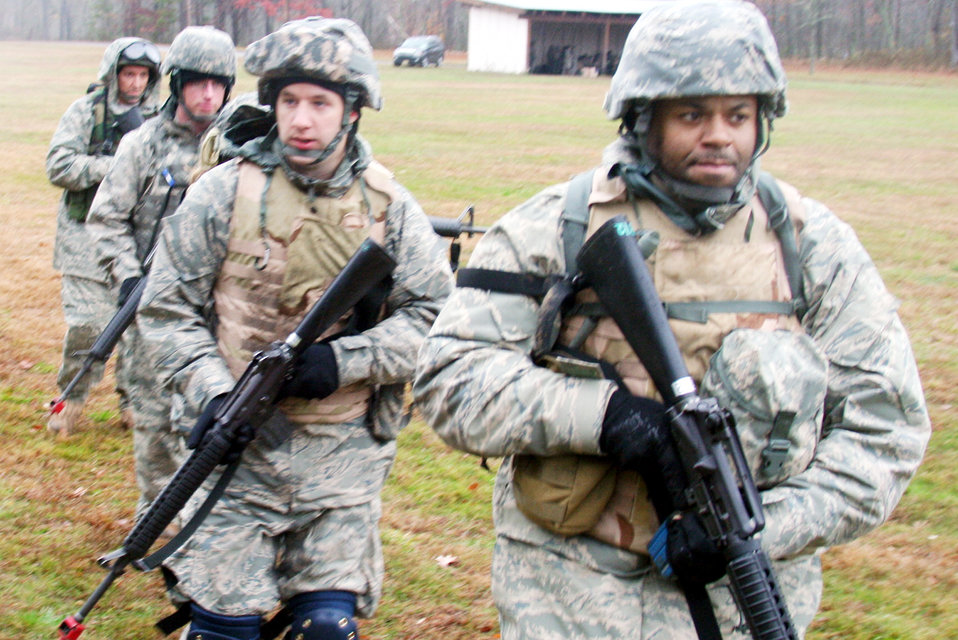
Deploying Airmen practice patrol tactics

Students in the Combat Airman Skills Training Course practice patrolling tactics during course training Nov. 12, 2009, on a range at Joint Base McGuire-Dix-Lakehurst, N.J. The Airmen from the 421st Combat Training Squadron teach the course to prepare Airmen for upcoming deployments. The squadron is assigned to the U.S. Air Force Expeditionary Center.